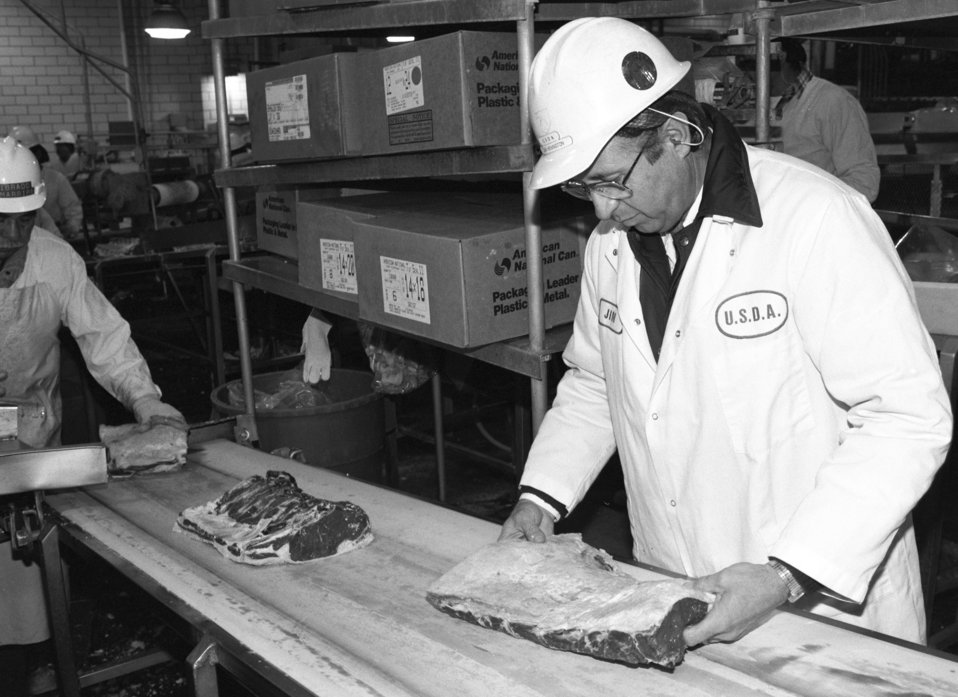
U.S. Department of Agriculture (USDA) Food Safety Inspection Service (FSIS) inspectors inspect beef using a Streamline Inspection System (SIS) at a processing plant in Plainview, TX on January 22, 1991.